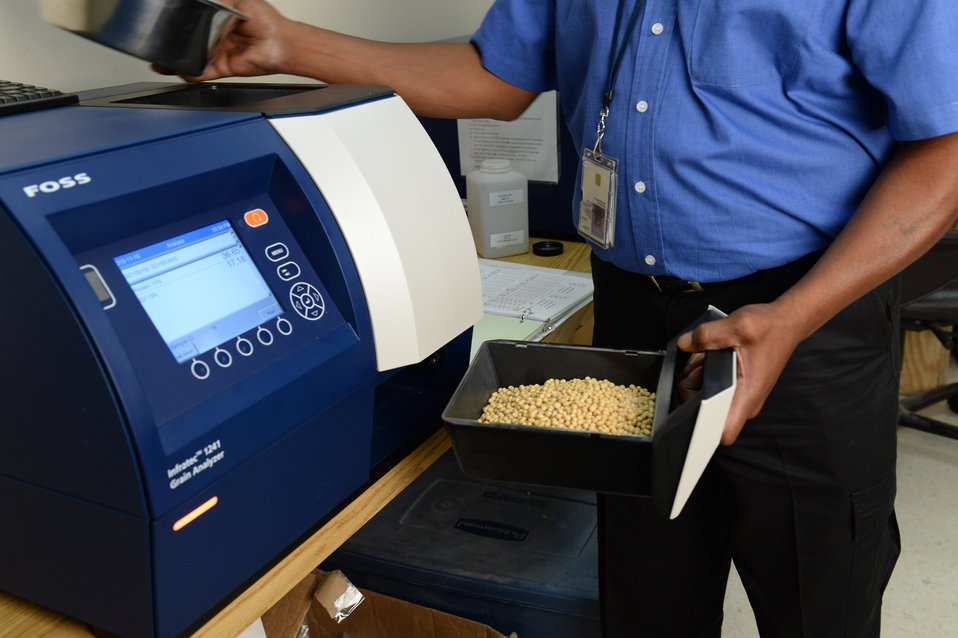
U.S. Department of Agriculture (USDA) Grain Inspection, Packers and Stockyards Administration (GIPSA) Federal Grain Inspection Service (FGIS) employee tests soybean samples at the FGIS inspection laboratory in New Orleans, LA on Monday, Nov. 18, 2013.